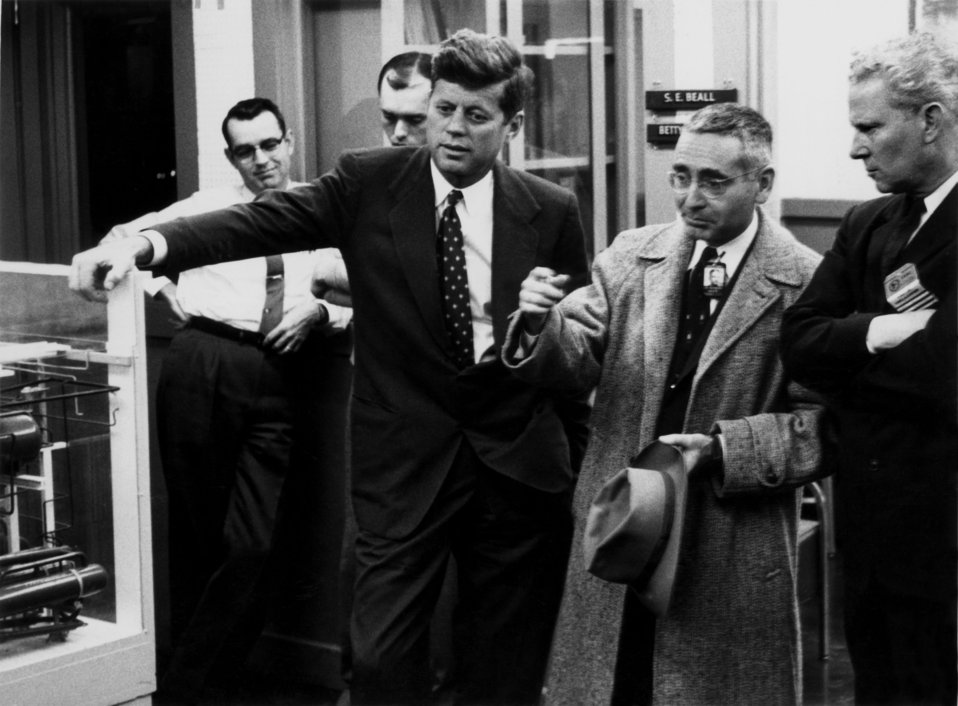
Sen. John F. Kennedy, ORNL Lab Dir. Alvin Weinberg and Sen. Gore visiting Oak Ridge

59-152-9 DOE photo by Ed Westcott

Sen. John F. Kennedy, ORNL Lab Dir. Alvin Weinberg and Sen. Gore visiting Oak Ridge National Lab. Oak Ridge Tennessee 2-24-1959